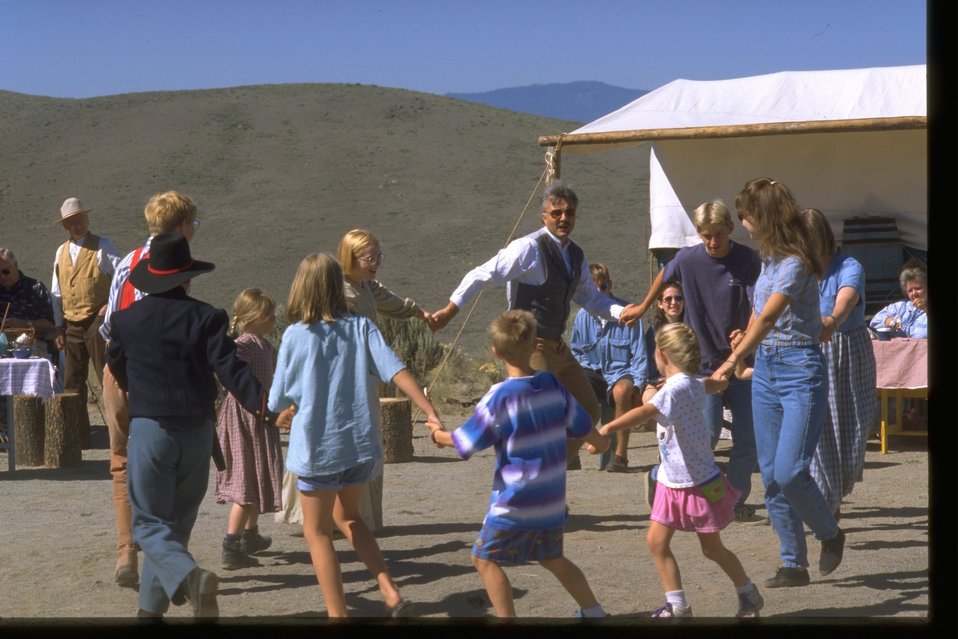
Dancing at the Pioneer Festival (NHOTIC).